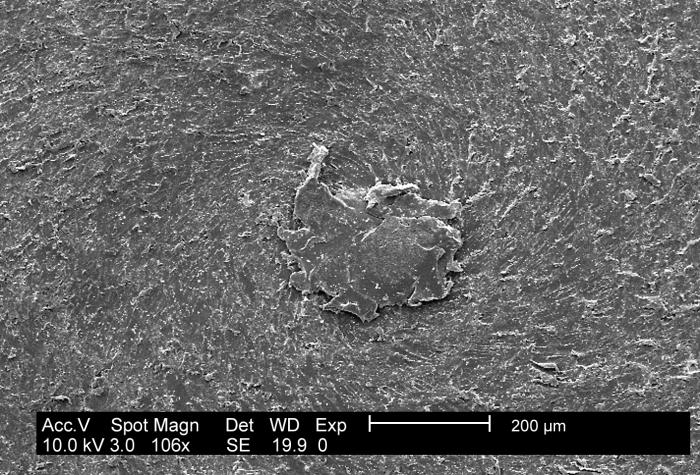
This low-mag SEM depicts an E. coli (ATCC 11775) biofilm on PC (polycarbonate) coupons using a CDC biofilm reactor.